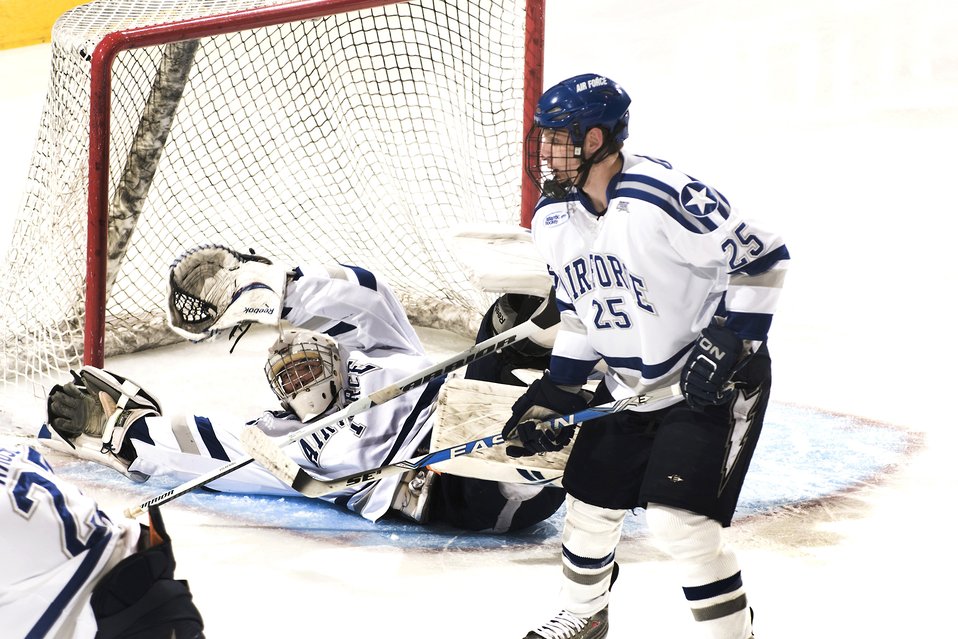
Air Force beats Army Black Knights

100313-F-2120E-004
Senior goalie Andrew Volkening successfully defends the goal as sophomore Tim Kirby assists as Air Force defeated Army 4-2 at the U.S. Air Force Academy's Cadet Ice Arena March 13, 2010. Air Force went on to win the best-of-three series 2-0, advancing to the Atlantic Hockey Association Final Four against Sacred Heart in Rochester, NY.